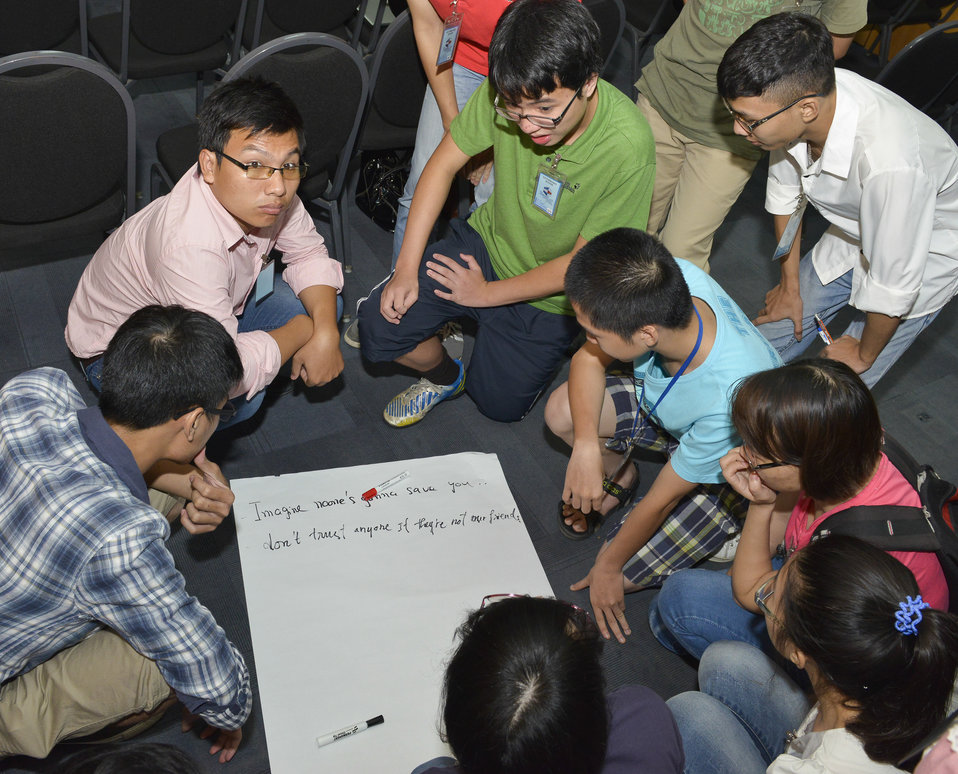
MTV Exit Talk to Engage Students in the Fight against Human Trafficking

Hanoi. June 5, 2014.